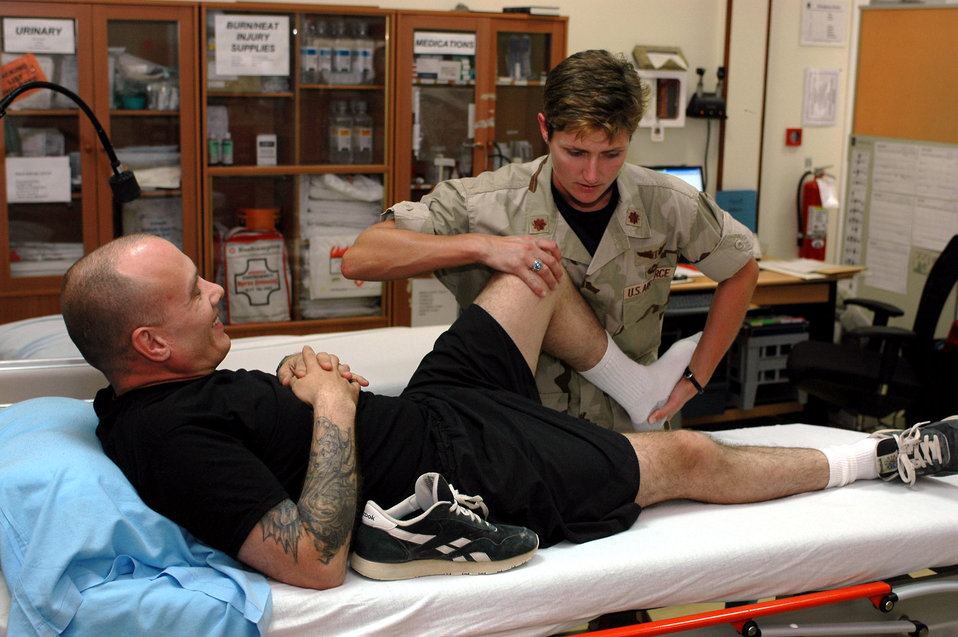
Medics treat servicemembers throughout Southwest Asia

Maj. (Dr.) Colleen Christensen works with Army Sgt. Michael Millman at the 379th Expeditionary Medical Group April 9 in Southwest Asia. Through its in-theater care program, the medical staff treats servicemembers who have been evacuated from forward operating locations and Navy ships operating in the U.S. Central Command area of responsibility. Major Christensen is the 379th Expeditionary Medical Group orthopedic surgeon and chief of hospital services, and Sergeant Millman is assigned to the 182nd Attack Reconnaissance Battalion.